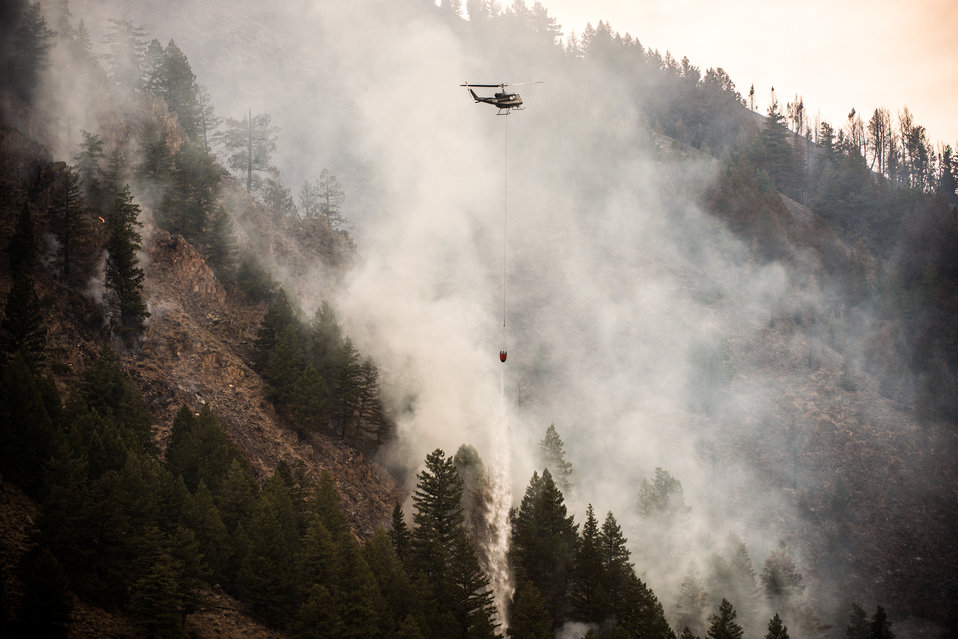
A Bell UH-1H helicopter pilot releases a full load of water from the Bambi Bucket, below it, the collapsible bucket utilizes a pilot-controlled release valve, that is able to deliver a concentrated column of water from the helicopter to the fire on the Carbonate Ridge, rising behind the Wood River, during Beaver Creek Fire, west of Hailey, ID, on Monday, Aug 19, 2013.